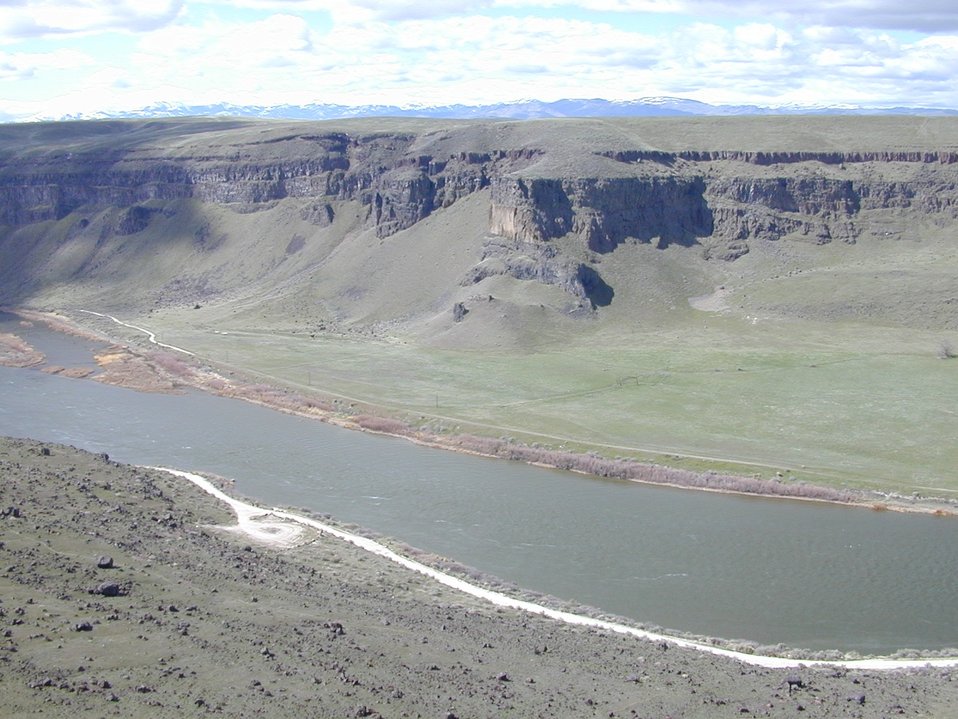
Snake River Birds of Prey National Conservation Area Lower Snake River District LSRD Snake River Canyon Scenic